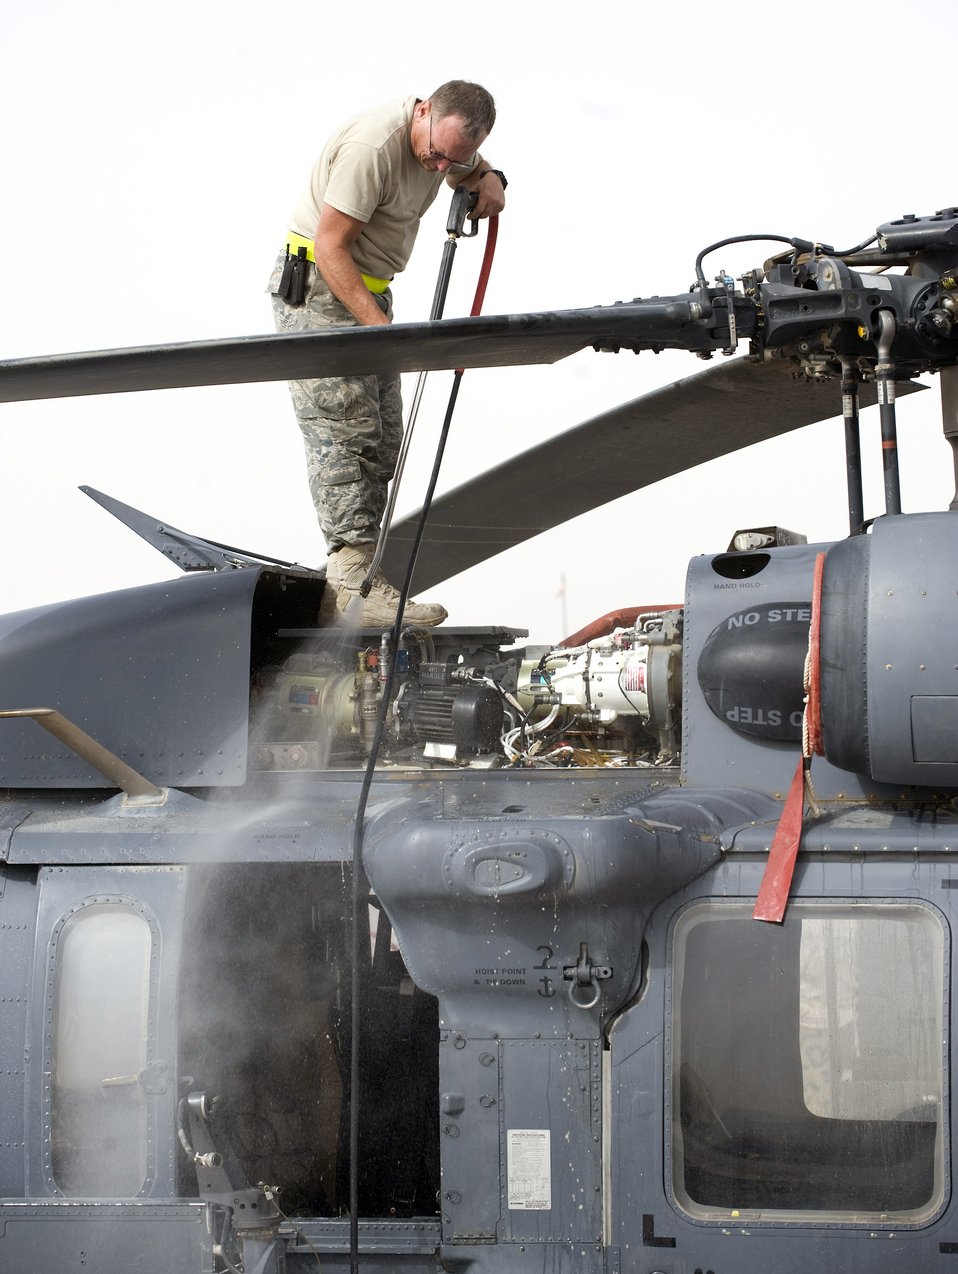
Airmen enhance Army medical evacuation mission

Master Sgt. William St. Clair pressure washes the drive train on an HH-60 Pave Hawk Aug. 15 at Kandahar Air Base, Afghanistan. Sergeant St. Clair is a crew chief for the 305th Expeditionary Rescue Squadron deployed from Davis-Monthan Air Force Base, Ariz.